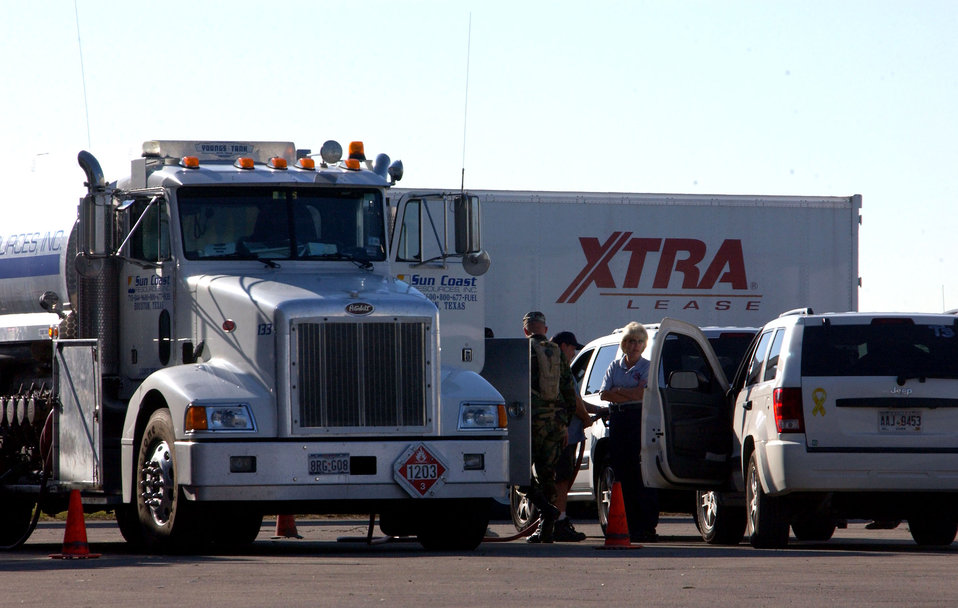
Wilma relief

HOMESTEAD AIR RESERVE BASE, Fla. -- Refueling specialists from the 482d Fighter Wing have refueled more than 200 tractor trailers engaged in Federal Emergency Management Agency Hurricane Wilma relief operations. Their operation began Oct. 20.